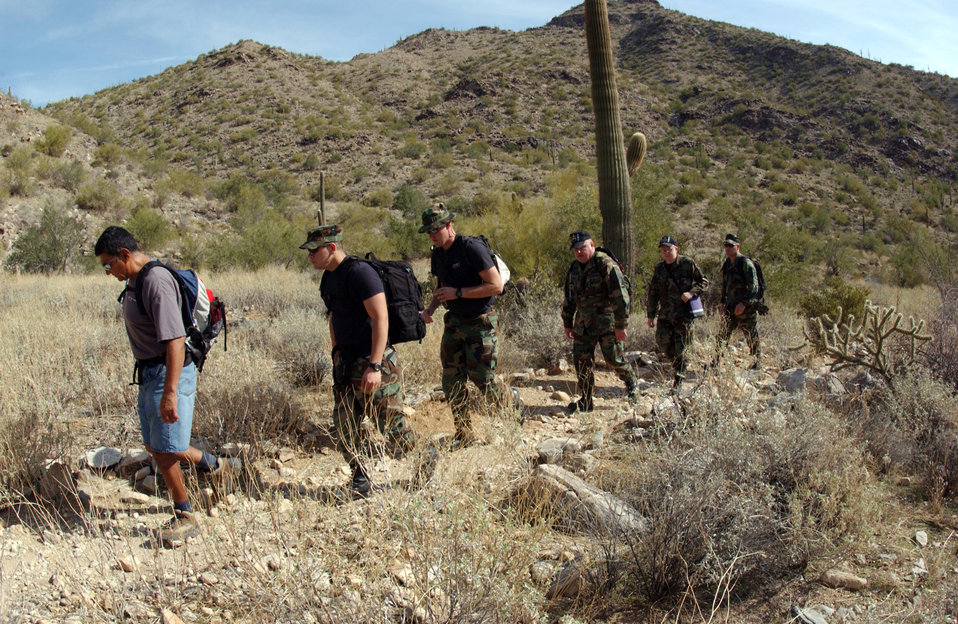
Hiker finds F-16 rack

Airmen with the 56th Civil Engineer Squadron explosive ordnance disposal unit and the 56th Equipment Maintenance Squadron at Luke Air Force Base, Ariz., hike up the White Tank Mountains on Thursday, March 23, 2006. The group was going to the site of an F-16 Fighting Falcon triple ejector rack to ensure it didn't contain unexploded cartridges. The rack was released from a 61st Fighter Squadron F-16 during an in-flight emergency on Aug. 11, 2003. A local resident found the item while hiking and led the Air Force team to the site.